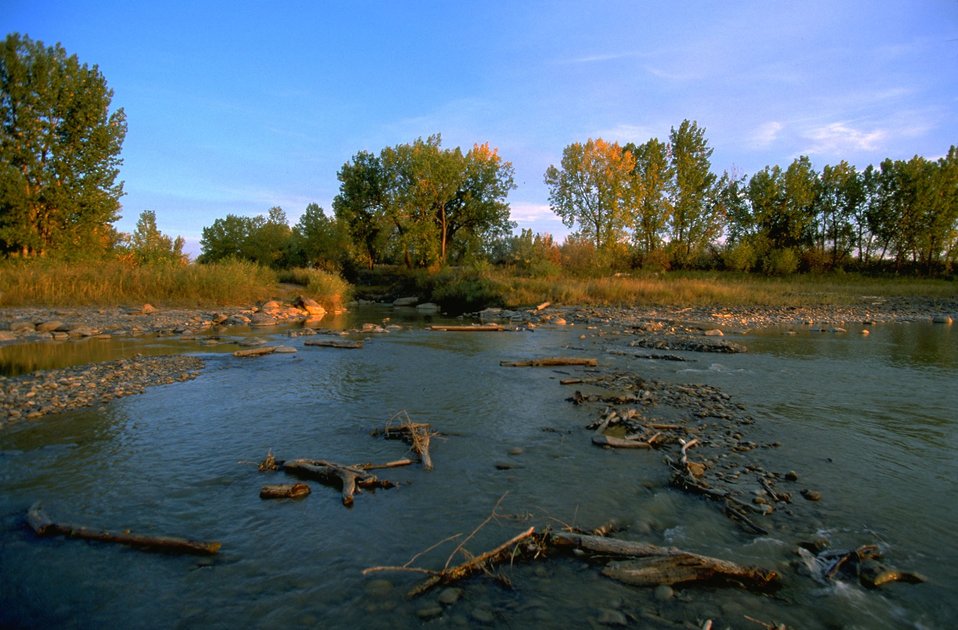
Yellowstone River near Matthews Recreation Site